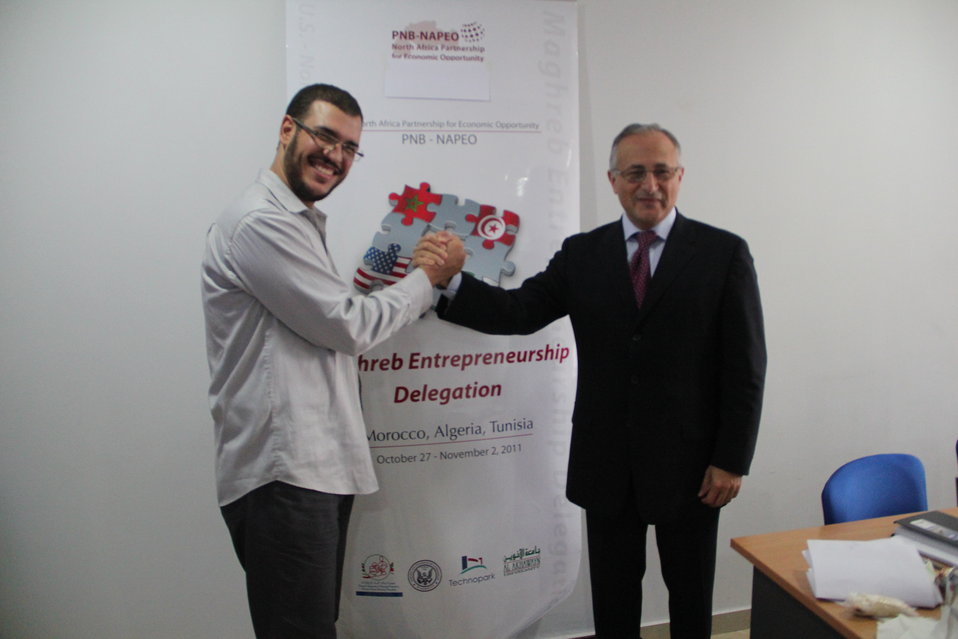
Algerian Tech Town Winner Benali Shakes Hands With Tech Town Wayne State Represetnative Chebbani

Youghourta Benali, Maghreb Delegation in Algeria winner and founder of Walletix, poses for a photo with Tech Town Wayne State and American Arab Chamber Representative Ahmad Chebbani in Algiers, Algeria, on October 30, 2011.